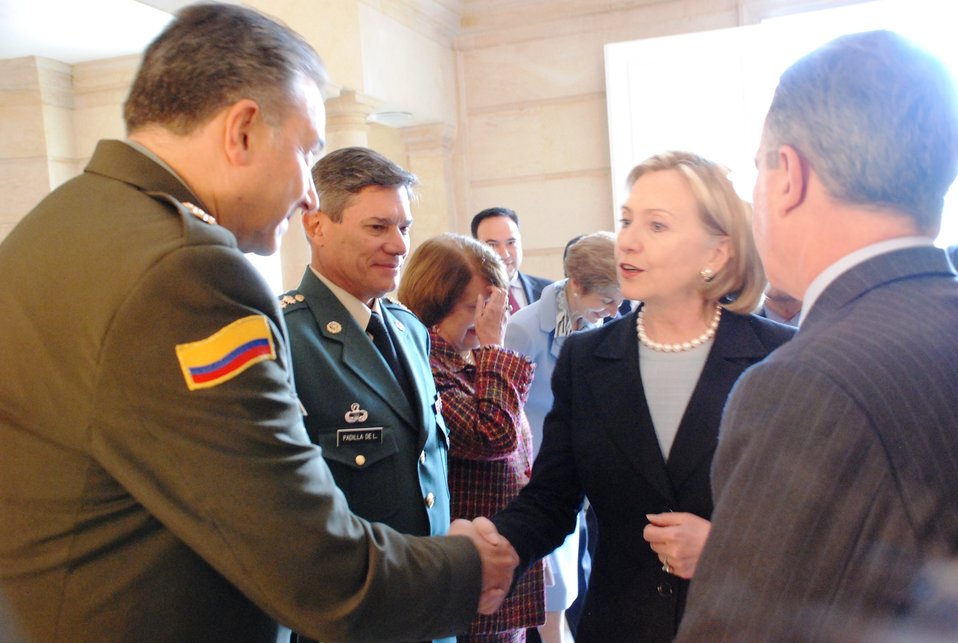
Secretary Clinton Meets Colombian Military Officials

U.S. Secretary of State Hillary Rodham Clinton is greeted by Colombian military officials in Bogotá, Colombia, on June 9, 2010.